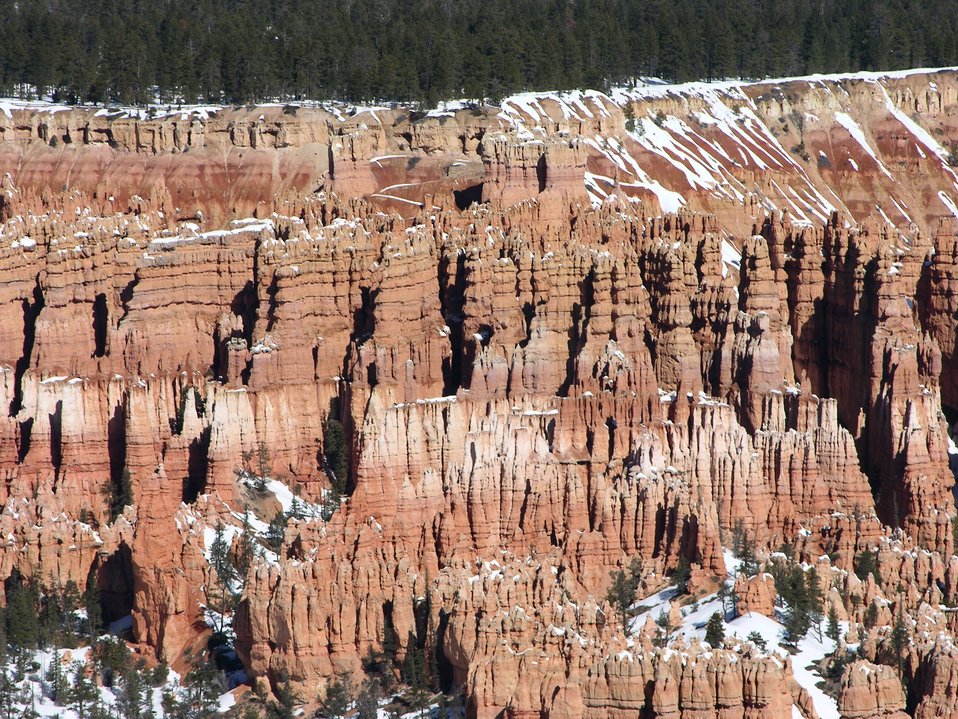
Bryce Canyon National Park